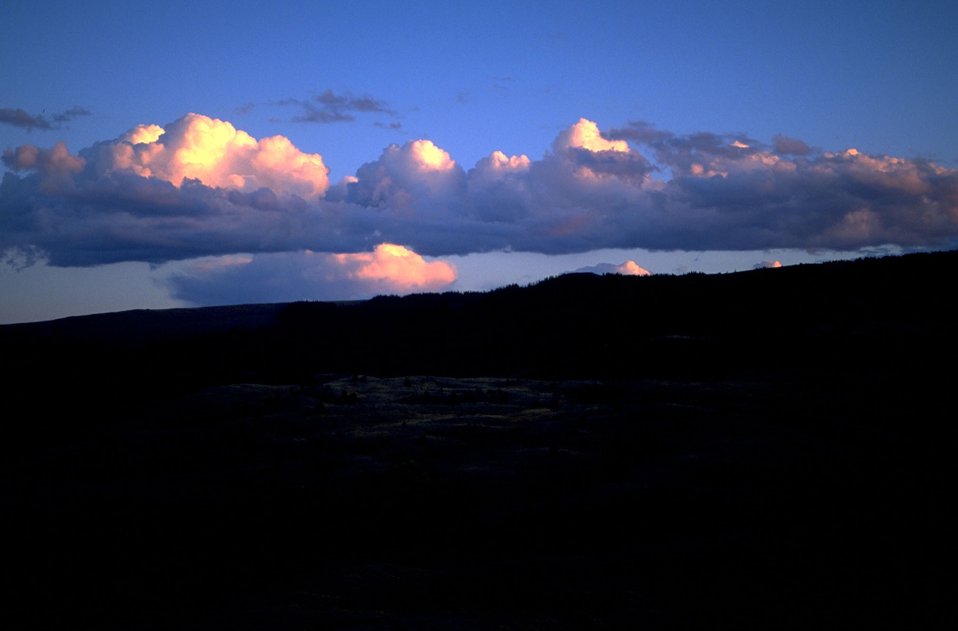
Reflection of the sun on clouds